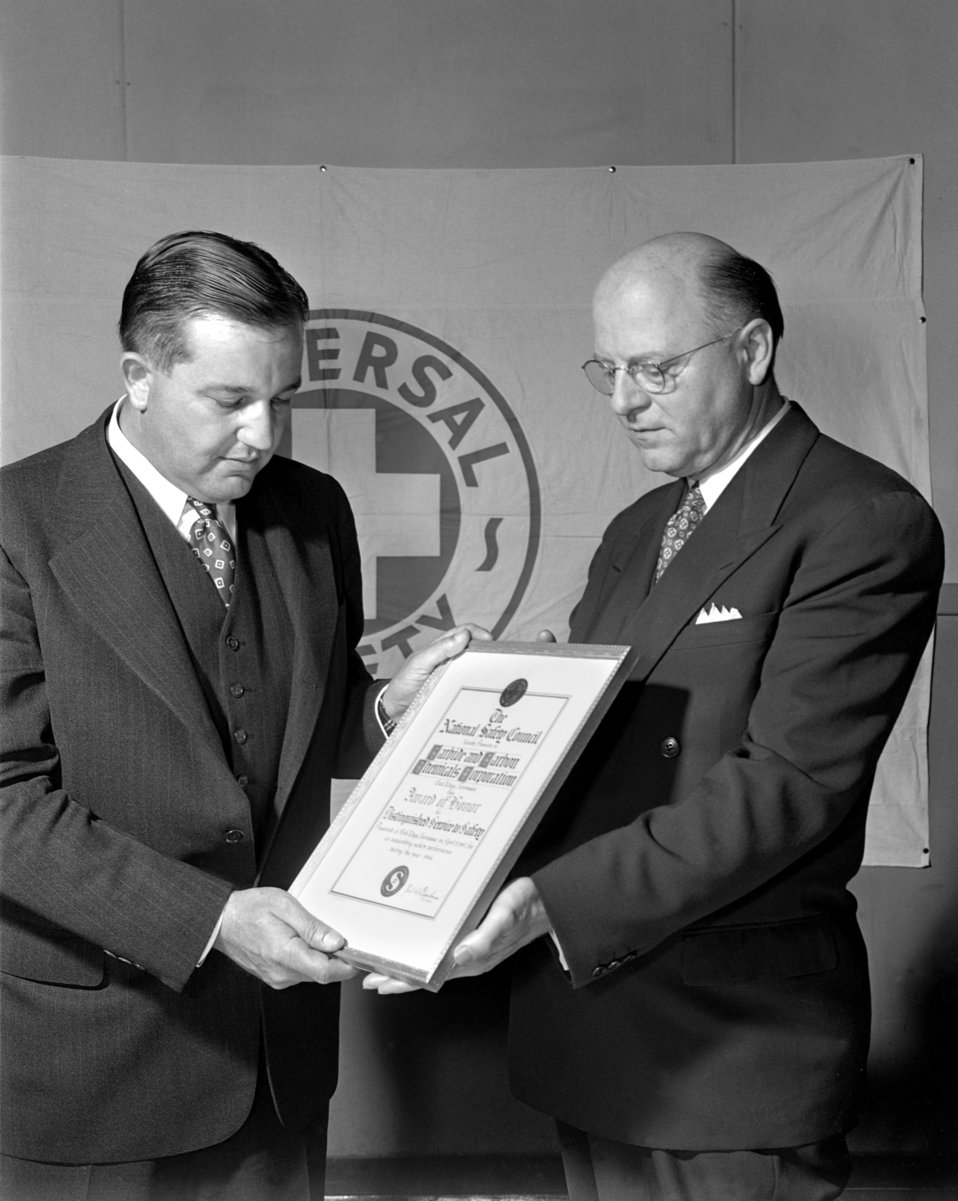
Saftey Award Oak Ridge 1947

3418-2 DOE photo Ed Westcott 4-22-1947 L to R Clark Center and Ned H. Dearborn Oak Ridge Tennessee